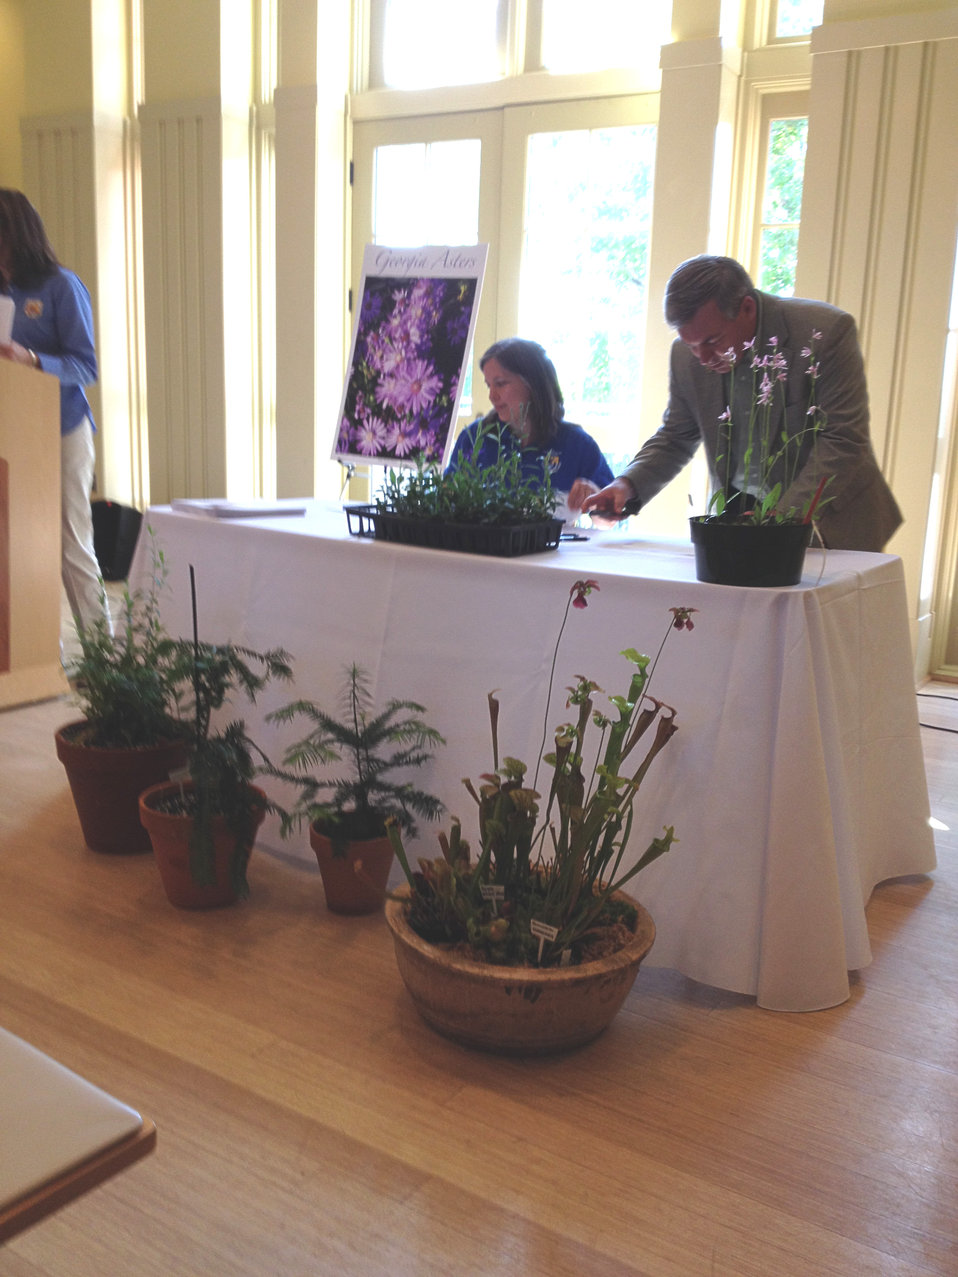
Georgia Department of Natural Resources's Dan Forester signs the agreement

Georgia aster is an uncommon Southern plant that declined for decades, to the verge of receiving federal protection. However, nine organizations, private and public, are committing to conserve the plant in an effort that should keep it off the endangered species list. The commitment will be memorialized this Friday in an agreement called a Candidate Conservation Agreement, designed to proactively conserve plants and animals before they need Federal protection.

The Candidate Conservation Agreement was signed on Friday, May 16 at the Atlanta Botanical Gardens.